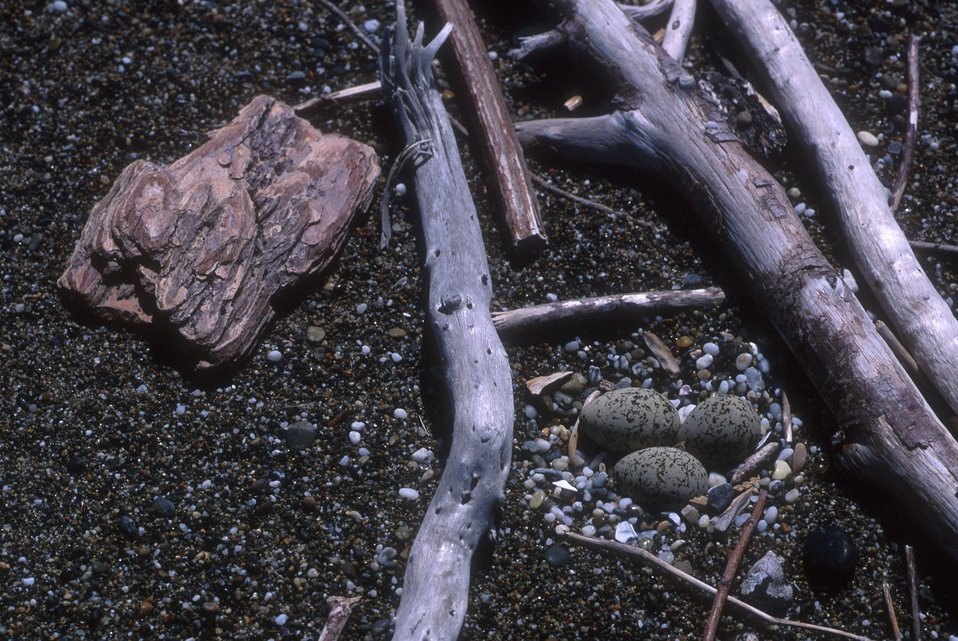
Western Snowy Plover nest with eggs